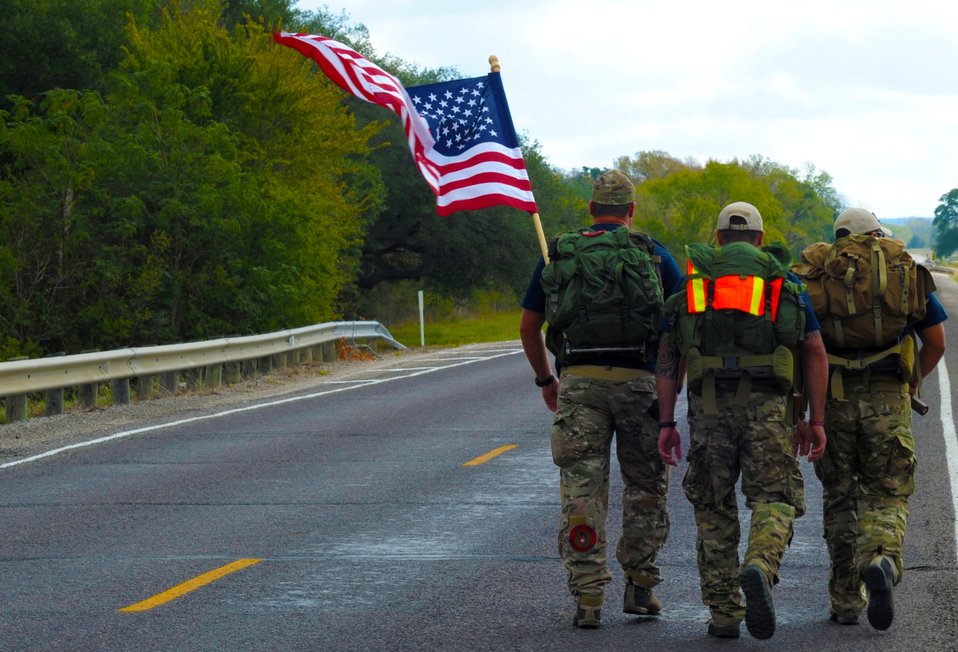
Marching in honor

Members of Team 3 pass through Flatonia, Texas, Oct. 17, 2011, during the Tim Davis Memorial. The march honored fallen special tactics Airmen and consisted of six, three-member teams. The march spanned across four states before ending at the Special Tactics Training Squadron at Hurlburt Field, Fla., Oct. 26, 2011.